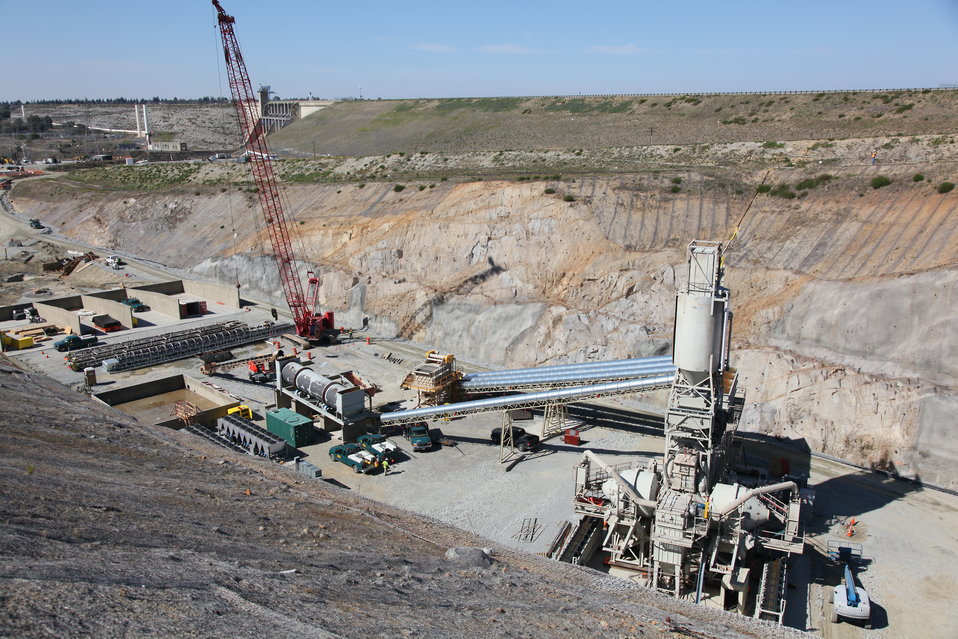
Sand drum placed into concrete batch plant at Folsom auxiliary spillway

Contractors for the U.S. Army Corps of Engineers Sacramento District position a sand drum in the concrete batch plant at the excavation site for the Folsom dam auxiliary spillway in Folsom, Calif., March 8, 2012.The sand drum is an integral component in processing high quality concrete as it heats and mixes the sand before it reaches the batch plant final mix. Concrete paving of the spillway chute is scheduled to begin in May. The spillway, scheduled to be ready for use in 2017, will allow Folsom Dam to release water sooner and more safely. The project is part of the Folsom Dam Joint Federal Project, a joint effort of the U.S. Army Corps of Engineers Sacramento District, the U.S. Bureau of Reclamation, the Central Valley Flood Protection Board and the Sacramento Area Flood Control Agency to improve the safety of the dam and reduce flood risk for the greater Sacramento area.